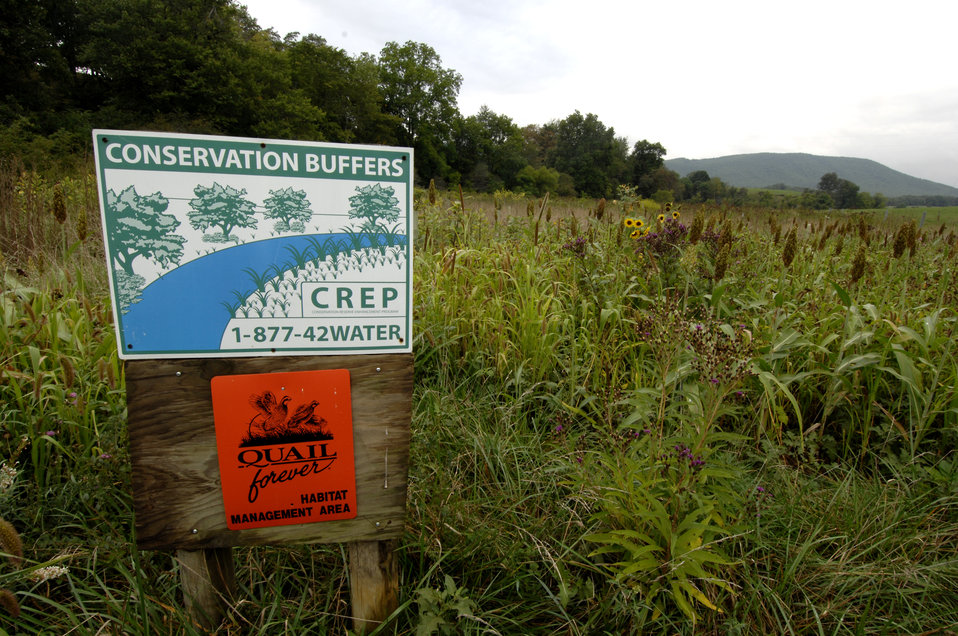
The U.S. Department of Agriculture (USDA) Natural Resource Conservation Service (NRCS) works with local farmers as part of the Chesapeake Bay Watershed Initiative (CBWI). CBWI is voluntarily program that farmers, ranchers and forestland owners install conservation practices on hundreds of thousands of acres annually to help support rural economies, protect wildlife habitat and improve water quality in the Chesapeake Bay Watershed in Tidewater County, Virginia on September 9, 2008. This is a conservation buffer zone for a quail habitat. Conservation buffers are areas or strips of permanent vegetation established in and around row crops. They include filter strips, riparian buffers, field borders, shallow water areas for wildlife, grassed waterways, field windbreaks, shelterbelts, designated wellhead protection areas, living snow fences, and contour grass strips. Buffer zones are designed to intercept sediment and nutrients, reduce soil erosion, enhance air and water quality and fish, and wildlife habitats, which encourages biodiversity and beautifies agricultural landscapes.